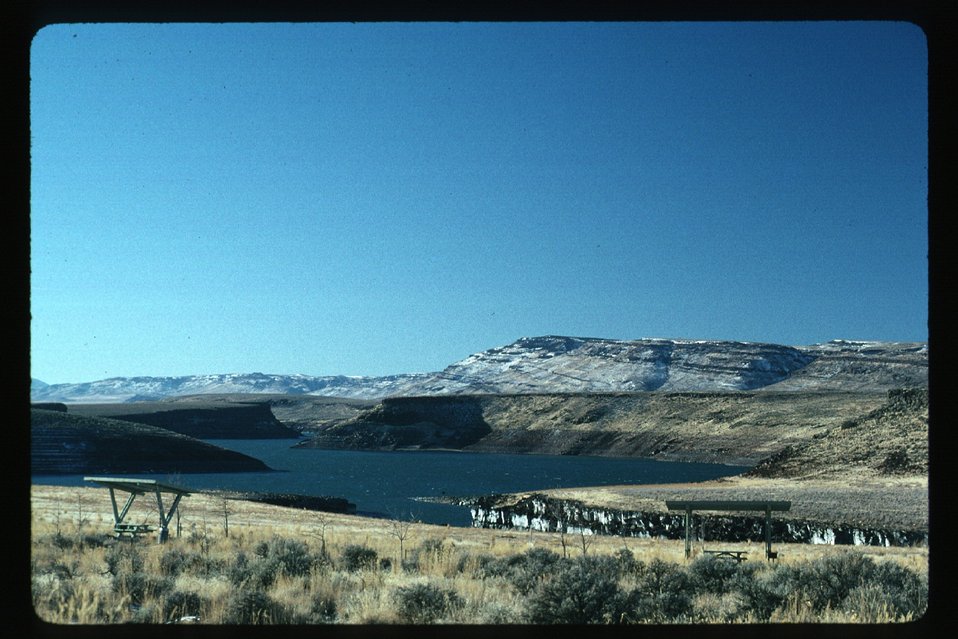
Salmon Falls Reservoir Scenic Burley Field Office USRD Upper Snake River District